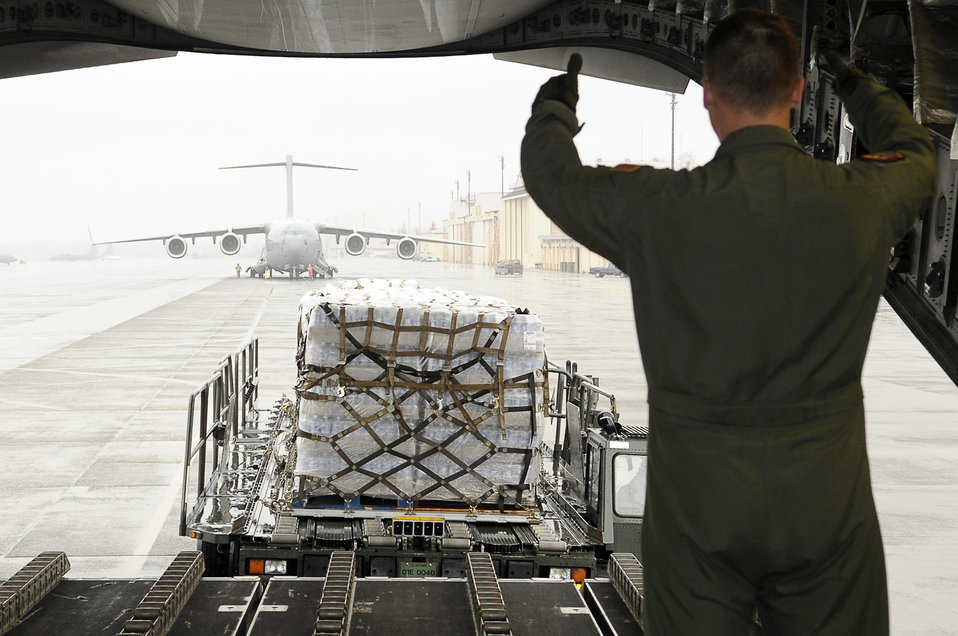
Airmen at Yokota deliver water in support of Japan disaster relief efforts

As part of Operation Tomodachi, Staff Sgt. Chris Baker guides a K-loader with humanitarian supplies behind a C-17 Globemaster III March 21, 2011, at Yokota Air Base, Japan. Crews unloaded the water and other relief items at Sendai Airport as American forces worked with their Japanese counterparts to aid the people of Japan in the aftermath of an earthquake that hit Japan March 11.